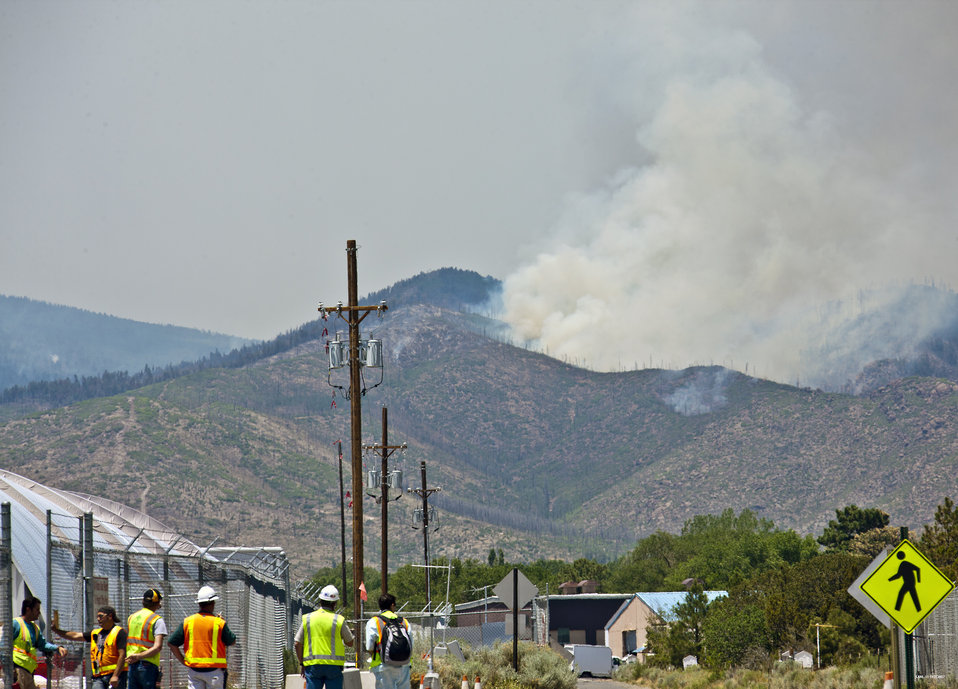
Protecting Recovery Act Cleanup Site During Massive Wildfire

July 2011 - Effective safety procedures in place at Los Alamos National Laboratory would have provided protections in the event that the raging Las Conchas
fire had spread to the site of an American Recovery and Reinvestment Act project.

A view of the Las Conchas Fire after the Lab reopened on July 6 from Material Disposal Area B.